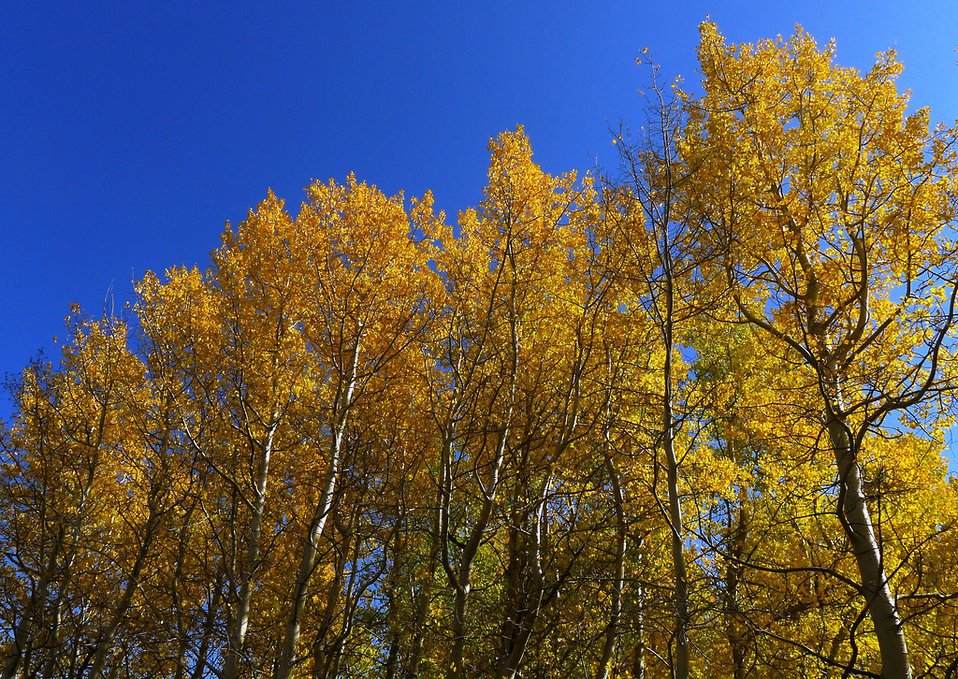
quaking aspens in autumn

on the way to Red Rock Lakes National Wildlife Refuge, MT